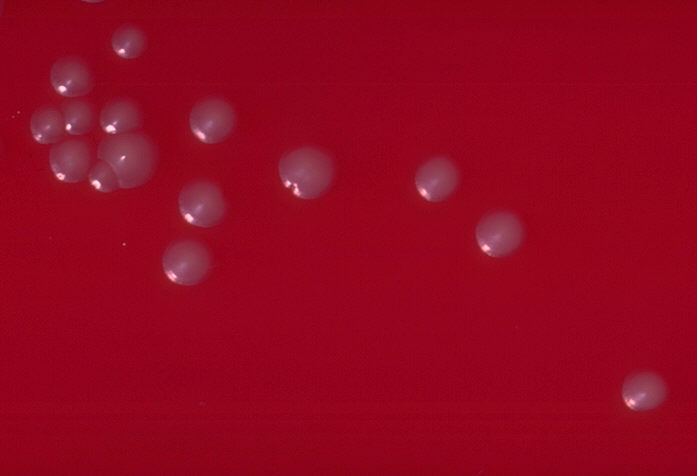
Blood agar plate culture of Corynebacterium diphtheriae (gravis), smooth.